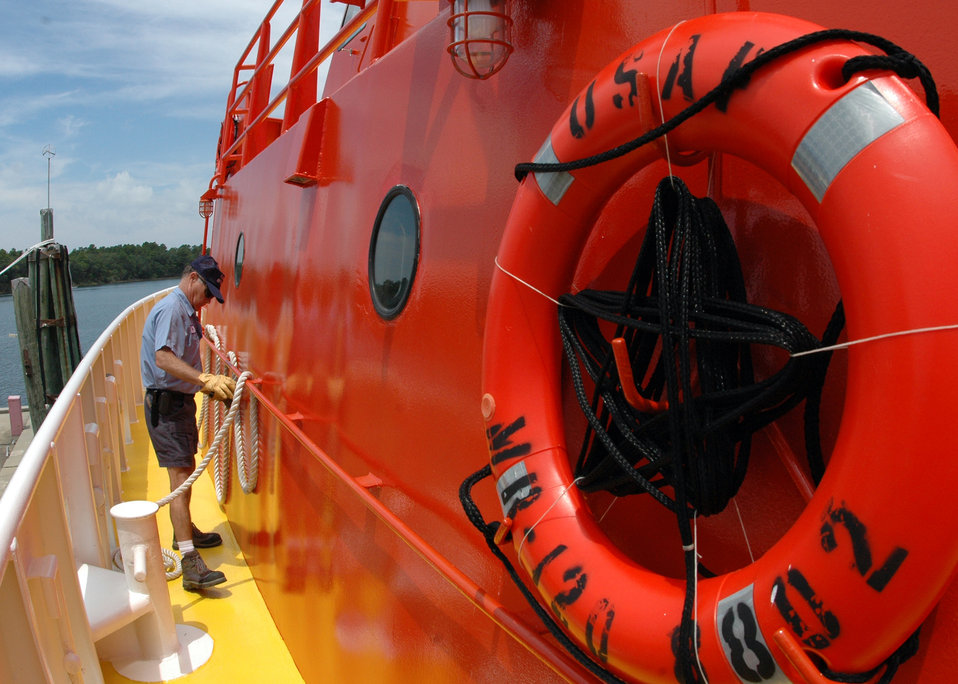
Drone recovery

Byron Howle secures a rope as the vessel leaves the docks July 22 at Tyndall Air Force Base, Fla. The boat is one of three 120-foot sea vessels owned by the Air Force used to recover sub-scale drones called BQM-167s after live-fire exercises over the Gulf of Mexico. The ships recover approximately 25 of the $800,000 drones each year. Mr. Howle is an 82nd Aerial Targets Squadron contractor with Florida Offshore.